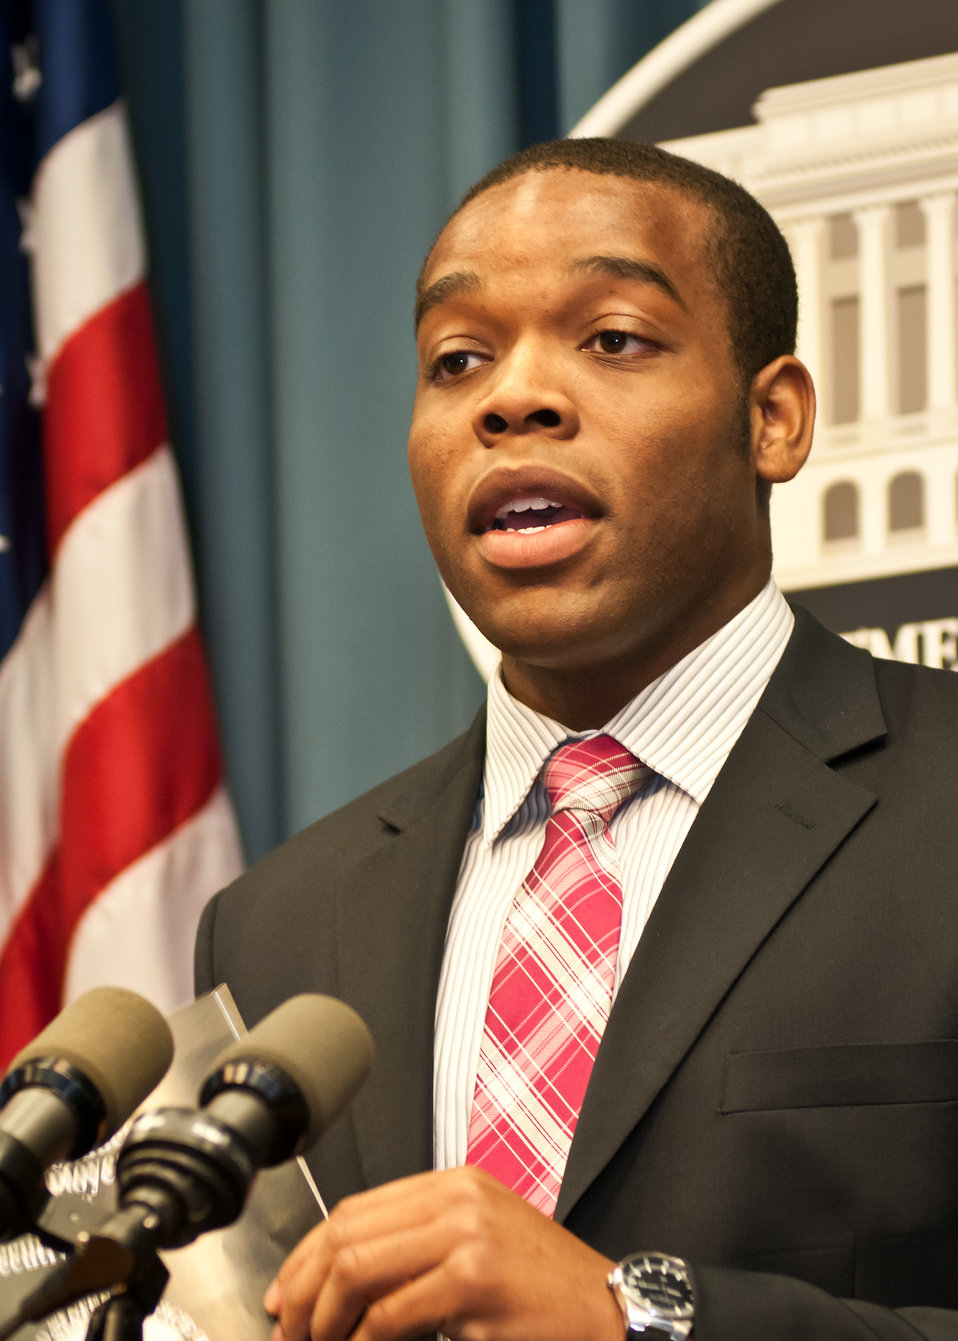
Agriculture Office of Ethics, Ethics Specialist Tristan Bramble welcomes United States Department of Agriculture (USDA) Hispanic Association of Colleges and University (HACU) and Tribal College summer interns during their orientation at USDA in Washington, DC, Monday, Jun. 6, 2011. The HACU/Tribal College National Internship Program represents more than 400 colleges and universities committed to higher education in the U.S., Puerto Rico, Latin America, Spain and Portugal and places student interns each year with federal agencies in Washington, DC or in field offices around the country.